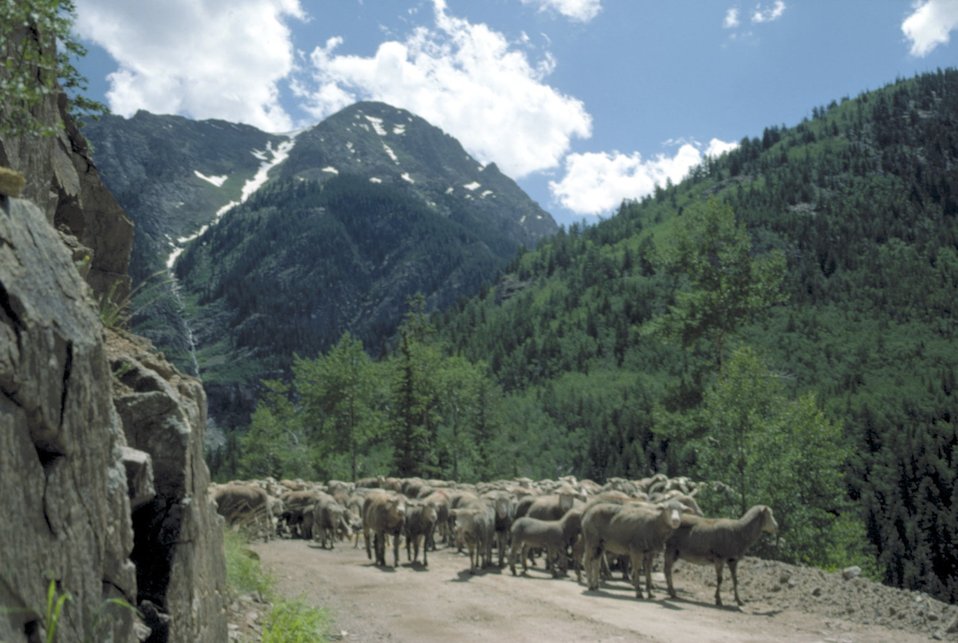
Sheep drive on Shelf Road along the Gold Belt National Back Country Byway.